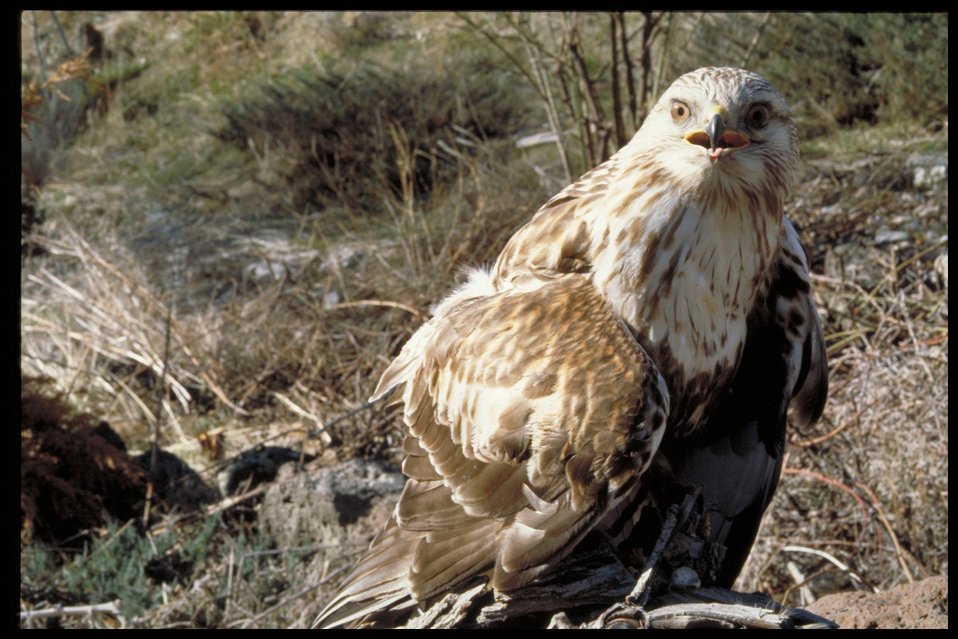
Rough-Leg Hawk Birds of Prey National Conservation Area BOP Owyhee Field Office LSRD Lower Snake River District